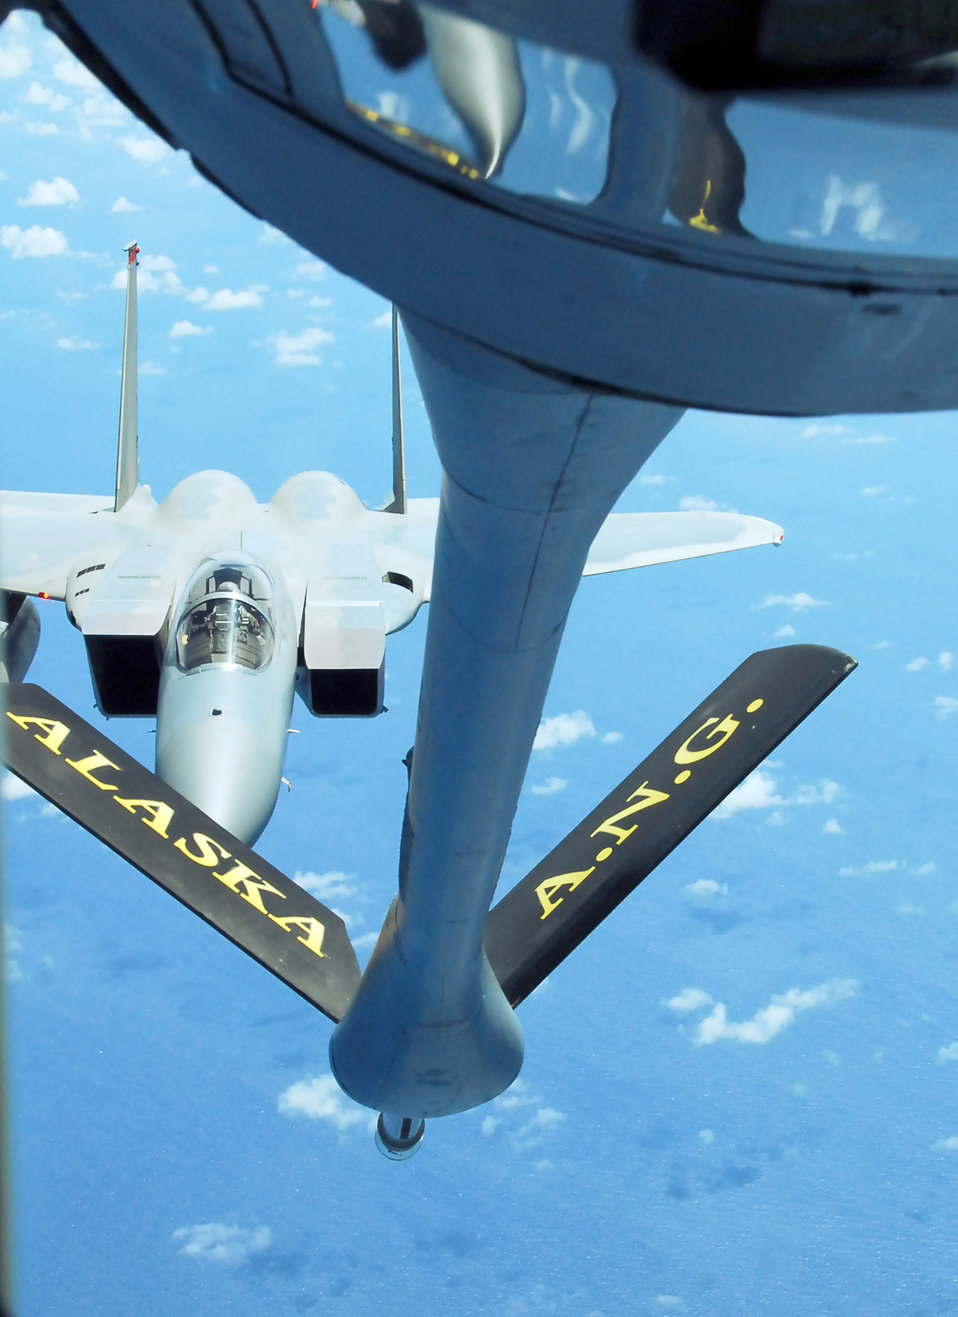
Andersen Airmen support continuous bomber presence

Members of the 506th Expeditionary Air Refueling Squadron perform a midair refueling mission on an F-15 Strike Eagle Oct. 14, 2010, over the Pacific Ocean. The 168th ARW is deployed to Andersen Air Force Base, Guam in support of the continuous bomber presence and theater security packages in the Pacific region. The 506th EARS is an Air National Guard unit deployed to Andersen AFB from the 168th Air Refueling Wing, Alaska.